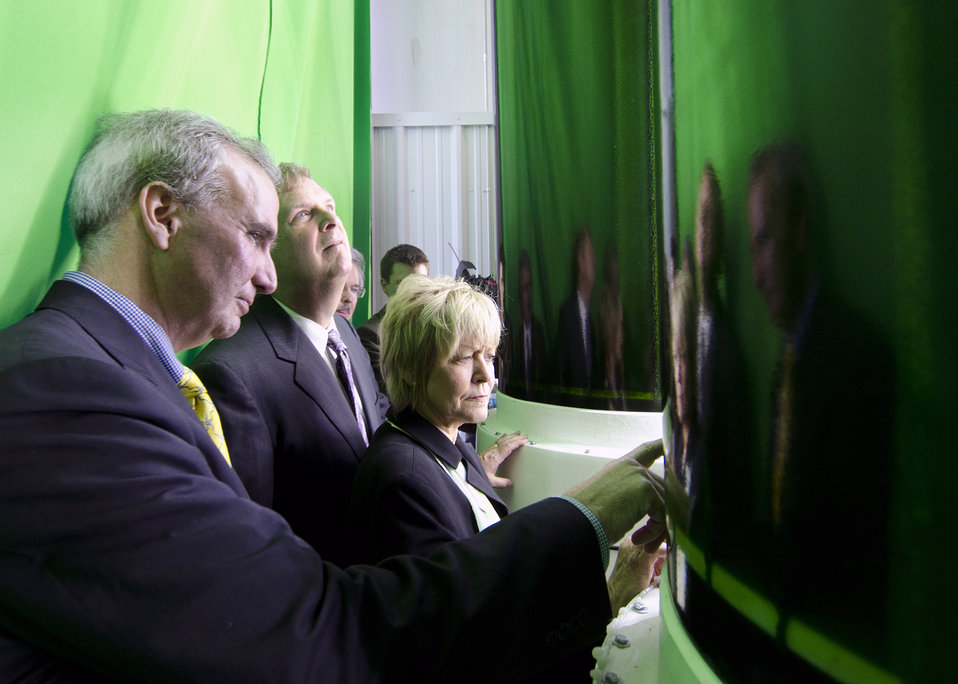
U.S. Department of Agriculture (USDA) Secretary Tom Vilsack toured BioProcess Algae facility at Green Plains Renewable Energy (GPRE), Inc. and unveiled the Phase II key component - commercial scale photo bioreactors/harvesters; after which he talked with company leadership, biologists, and engineers; guests and news media during the grand opening ceremony on April 15, 2011 in Shenandoah, IA. The operation is co-located within an GPRE’s ethanol factory and where BioProcess Algae technology is used to waste products; carbon dioxide, recycled heat and water to mass-produce algae. Algae from this facility are used for animal feeds; pharmaceutical and beauty products.